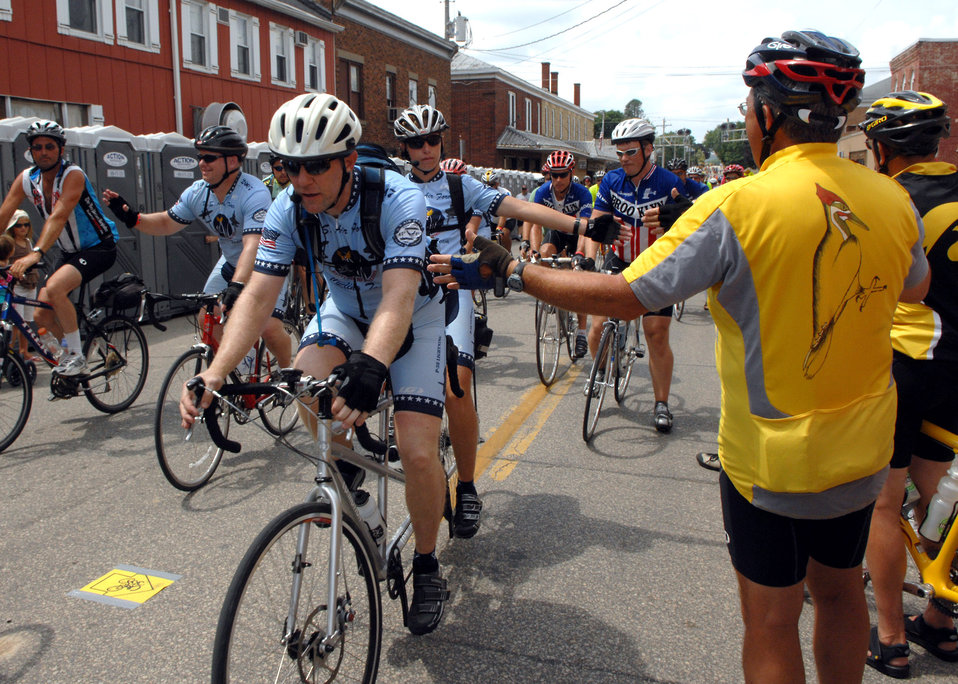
Air Force team a large presence in annual bike ride

Members of the Air Force Cycling Team are greeted by residents of Bellevue, Iowa, and other participants as they complete the Des Moines Register's Annual Great Bicycle Ride Across Iowa, or RAGBRAI, July 28. The 148 Air Force team members completed seven days of riding, maintaining an average of 70 miles a day, across the state of Iowa to support recruiting efforts and to show Airmen as being fit to fight.